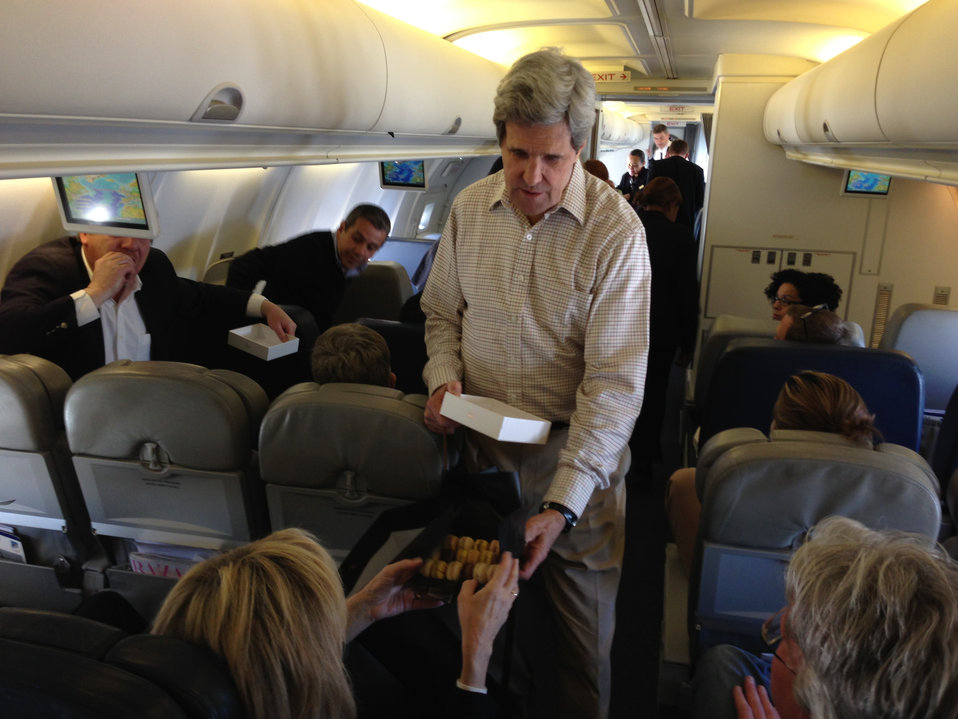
Secretary Kerry Shares Macarons With Press Corps

U.S. Secretary of State John Kerry shares macarons with the press corps during the flight from Paris to Washington on March 27, 2013.